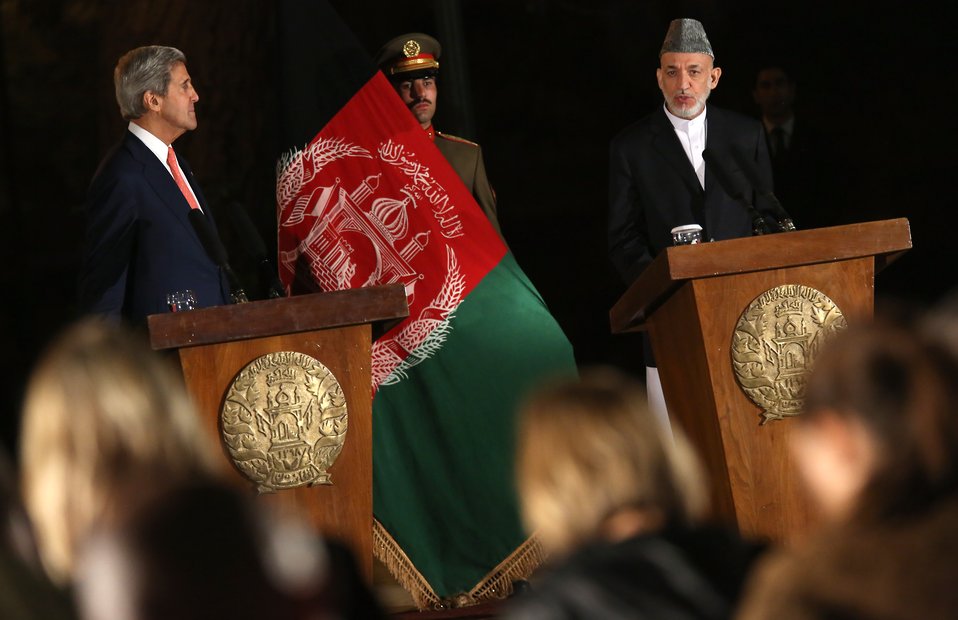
Secretary Kerry Discusses Bilateral Security Agreement With Afghanistan

U.S. Secretary of State John Kerry holds a press conference with Afghan President Hamid Karzai at the Presidential Palace on October 12, 2013, in Kabul, Afghanistan. You can view Secretary Kerry's remarks here: www.state.gov/secretary/remarks/2013/10/215358.htm.